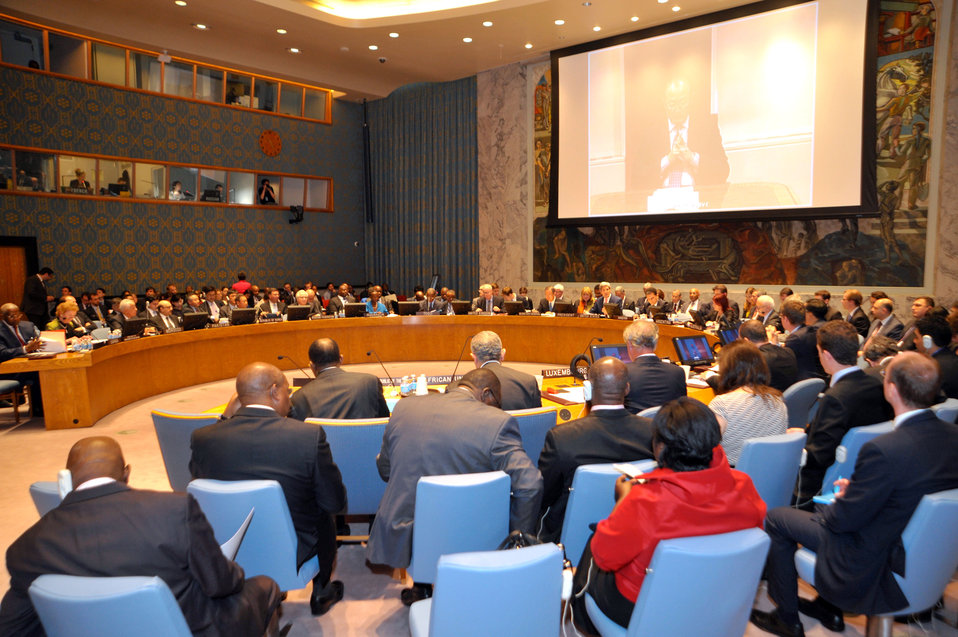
Secretary Kerry Kicks Off a Discussion of Africa's Great Lakes Region

U.S. Secretary of State John Kerry kicks off a discussion of Africa's Great Lakes region by the United Nations Security Council in New York City on July 25, 2013.